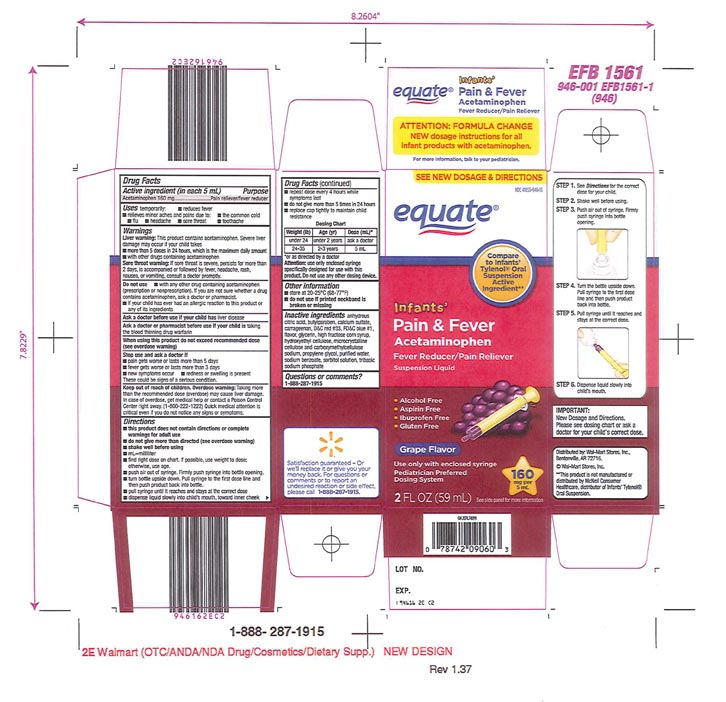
Recalled - Acetaminophen infant suspension liquid

November 1, 2013 – Product Recall – Perrigo Initiates Nationwide Voluntary Product Recall of Acetaminophen Infant Suspension Liquid, 160 Mg/5 Ml, Due to a Potential Defect with the Co-packaged Oral Syringe.